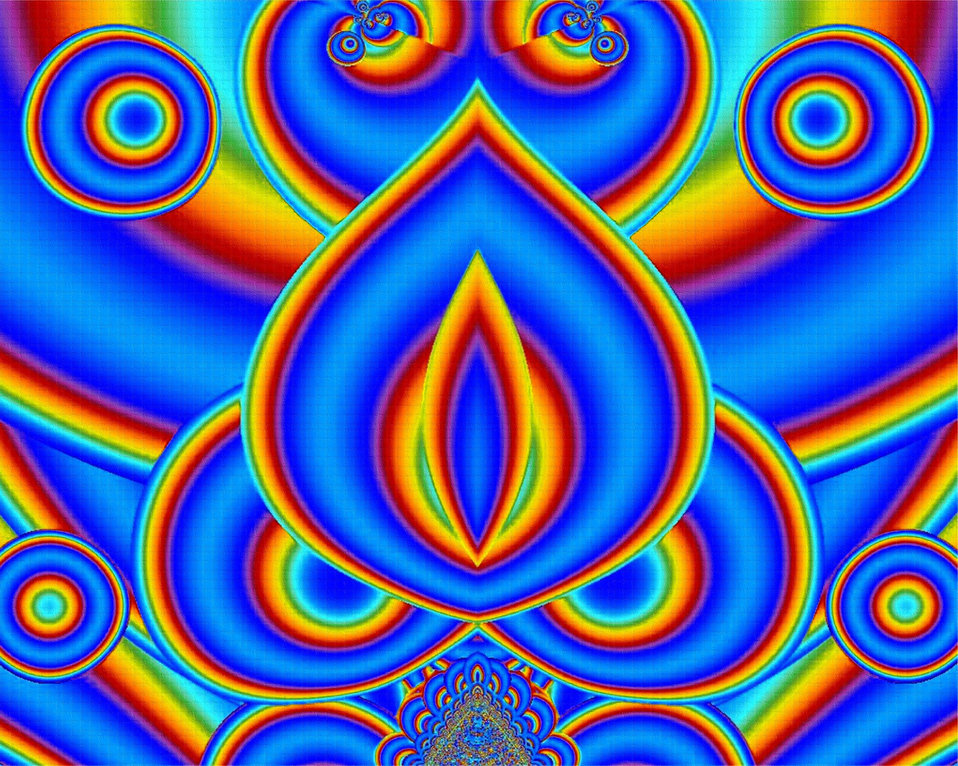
Fractal background # 1

Fractal multicolored background 2000 x 1600 - 200 dpi.